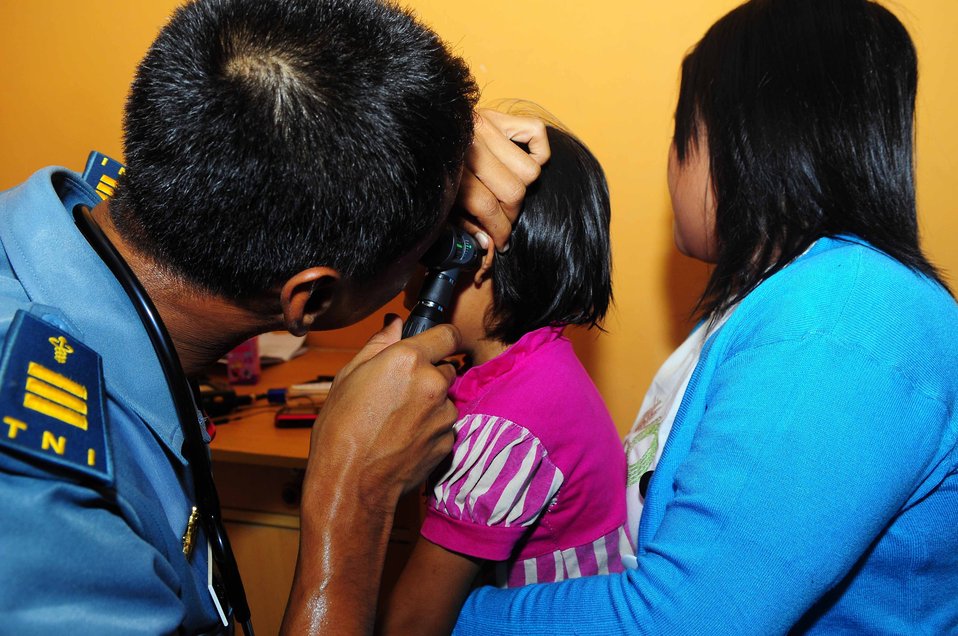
A Tentara National Indonesian medical professional examines a girl’s ear during a medical civic action program in Ternate, Indonesia, on July 23, 2010. Pacific Partnership 2010 is the fifth in a series of annual U.S. Pacific Fleet endeavors conducted in Indonesia as a disaster relief exercise aimed at strengthening regional partnerships.